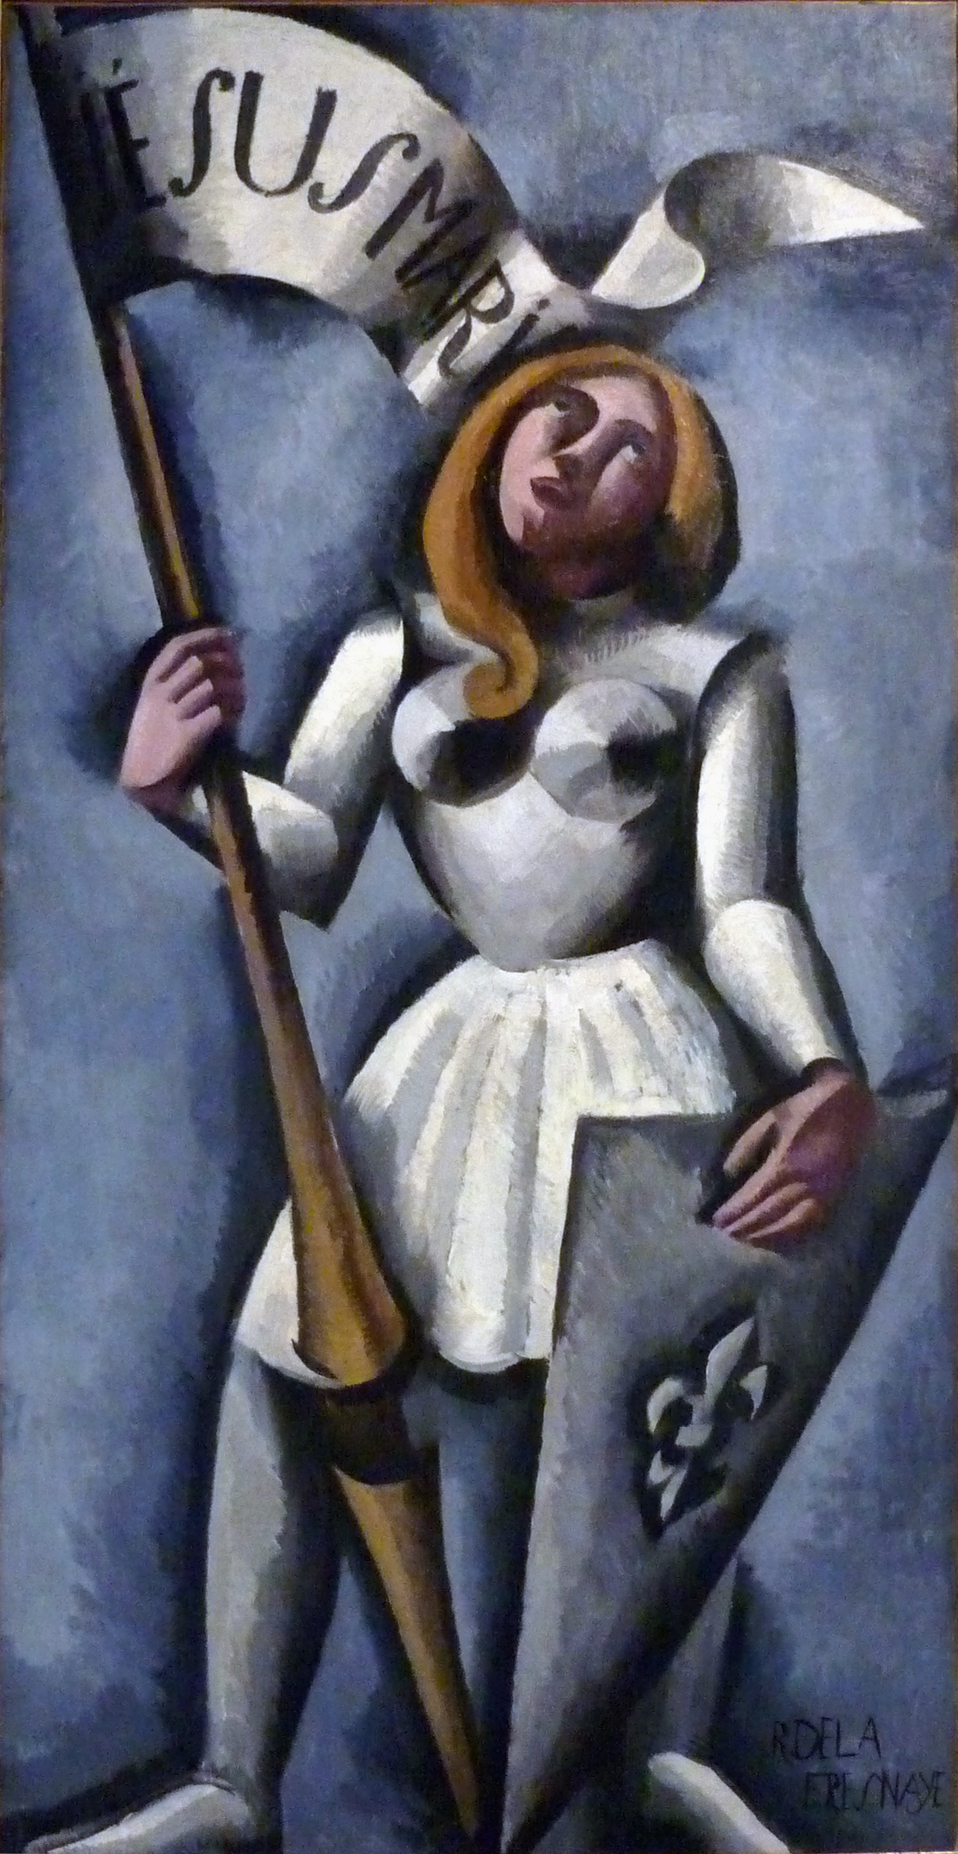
Français : Jeanne d'Arc Huile sur toile Tableau exposé au musée d'art moderne de Troyes N° d'inventaire : MNLP 1905 Informations détaillées : http://www.culture.gouv.fr/public/mistral/joconde fr?ACTION=RETROUVER&FIELD 98=AUTR&VALUE 98=LA FRESNAYE Roger de&NUMBER=4&GRP=0&REQ=((LA FRESNAYE Roger de) :AUTR )&USRNAME=nobody&USRPWD=4$%34P&SPEC=1&SYN=1&IMLY=&MAX1=1&MAX2=1&MAX3=100&DOM=All